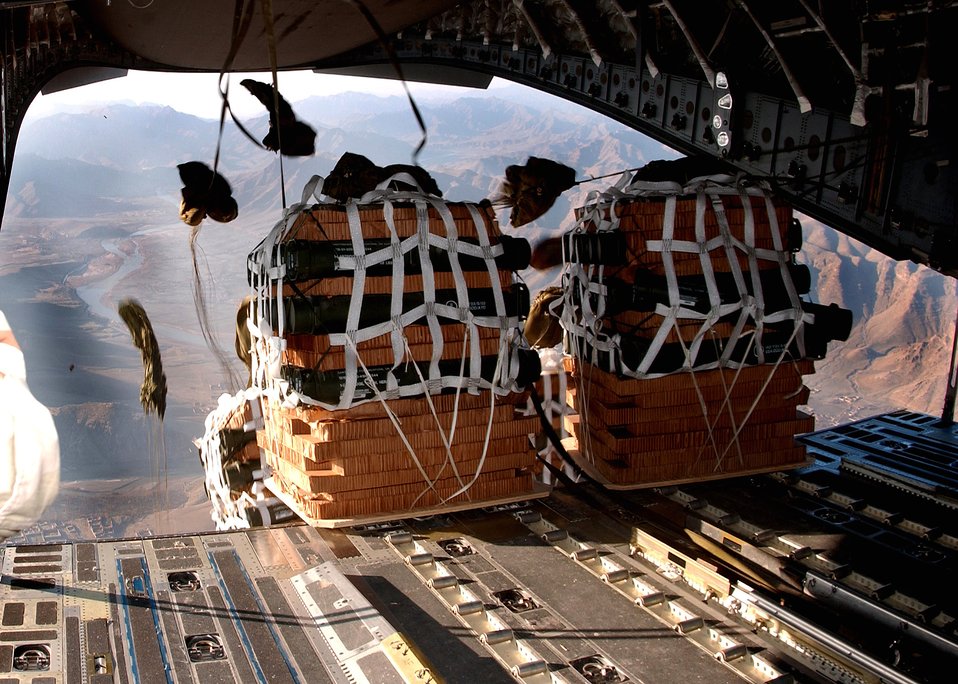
Dropping freedom

Parachutes begin to open on supply pallets being airdropped from a C-17 Globemaster III to servicemembers Jan. 2 at a remote camp in Afghanistan. The aircraft is from a desert air base in Southwest Asia.